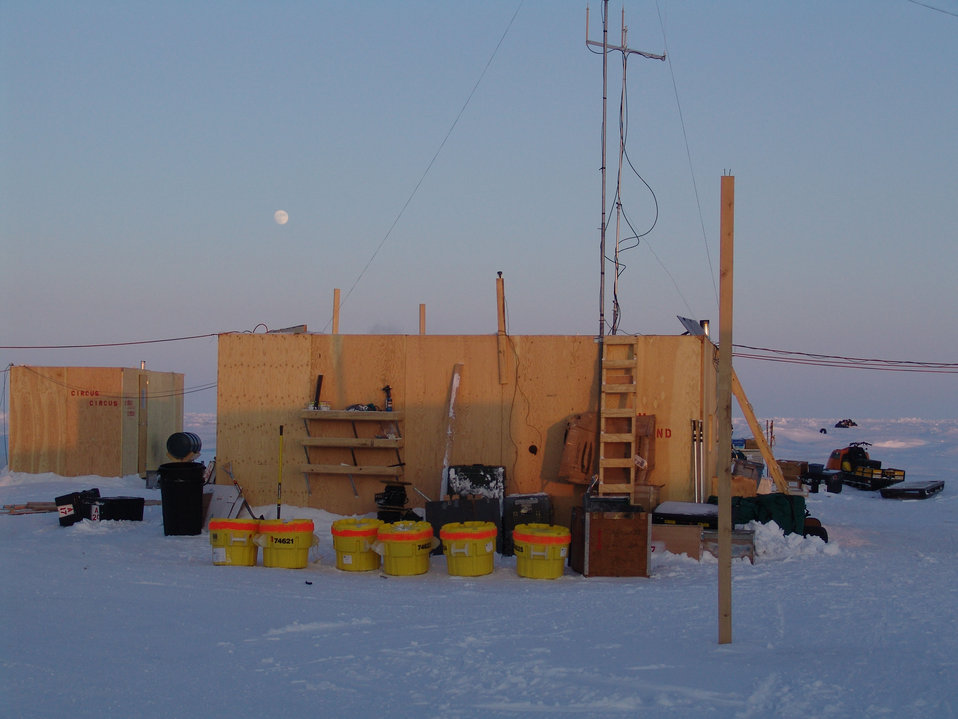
Circus Circus to the left and communications shed to right at ice camp. University of Washington Applied Physics Laboratory Ice Camp.